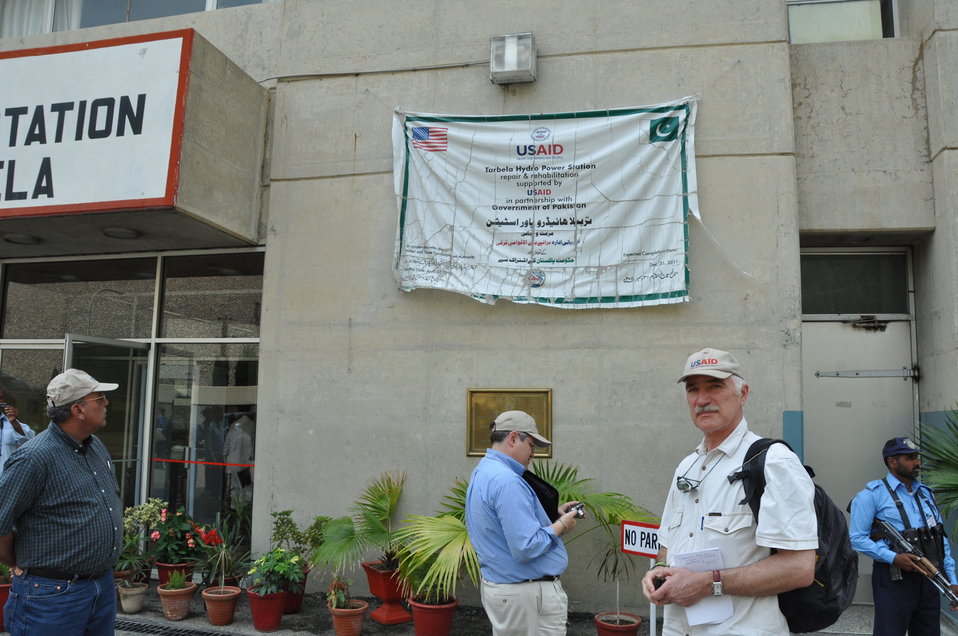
As part of the U.S. government's long-term commitment to improve energy supply in the country, USAID is supporting the completion of several high-impact energy sector projects in Pakistan. USAID is modernizing three generators in Tarbela Dam. In addition, we are helping construct Satpara Dam, providing support to Gomal Zam Dam, and upgrading the thermal plants at Jamshoro, Guddu, and Muzaffargarh. USAID is also partnering with the Government of Pakistan to reduce inefficiencies in the use of electricity and reform the sector so that it can grow with the economy and pay for regular maintenance.